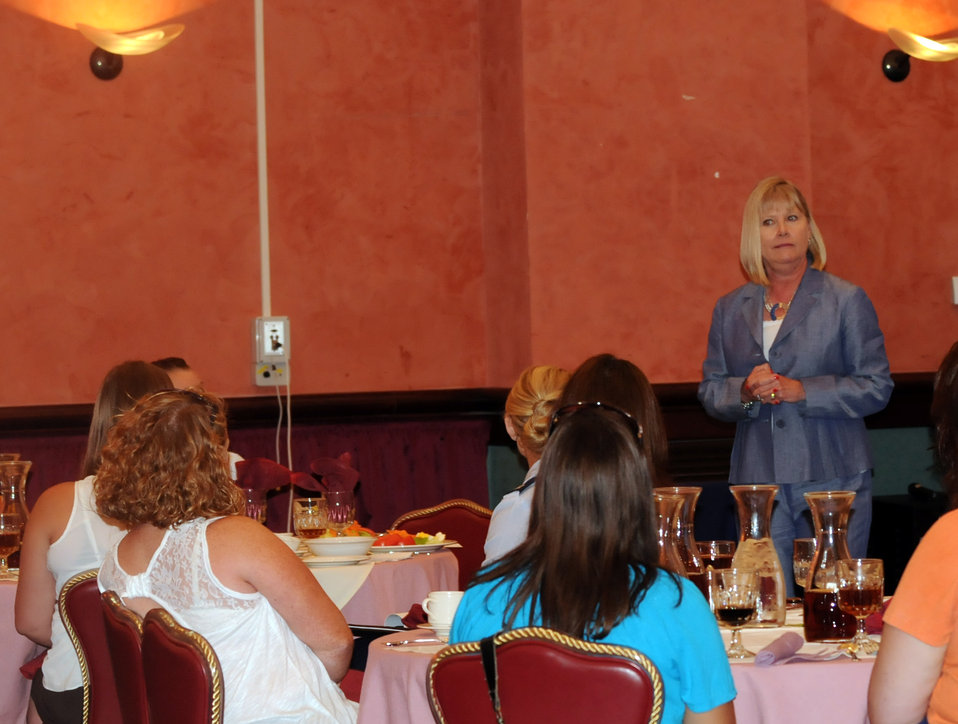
Chief of staff and spouse visit Aviano Air Base

Suzie Schwartz, wife of the Air Force Chief of Staff Gen. Norton Schwartz, talks with key spouses July 11, 2011, at Aviano Air Base, Italy. The general and his wife were visiting Aviano to meet with Airmen and their families and observe the installation’s mission.